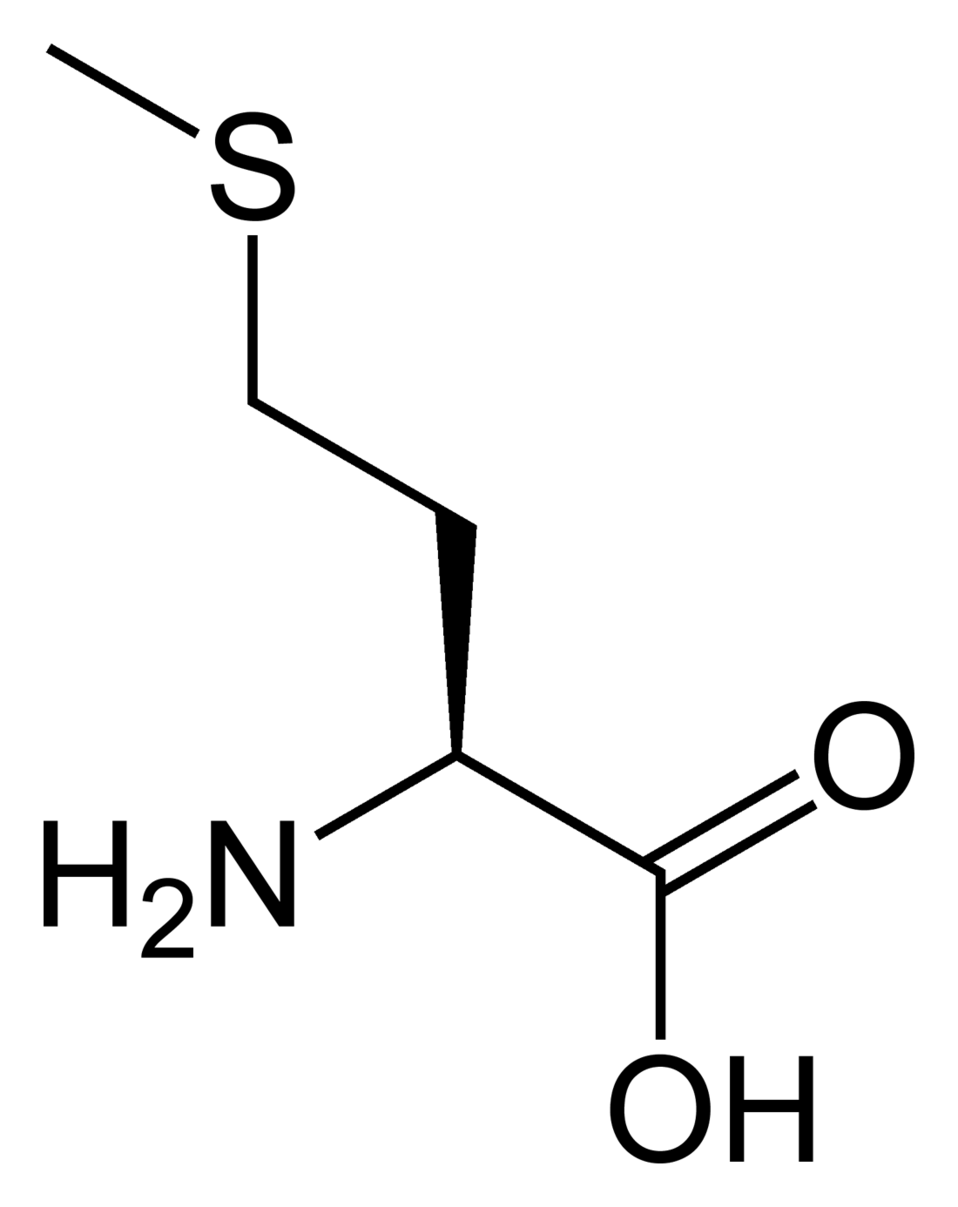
L-methionine-2D-skeletal